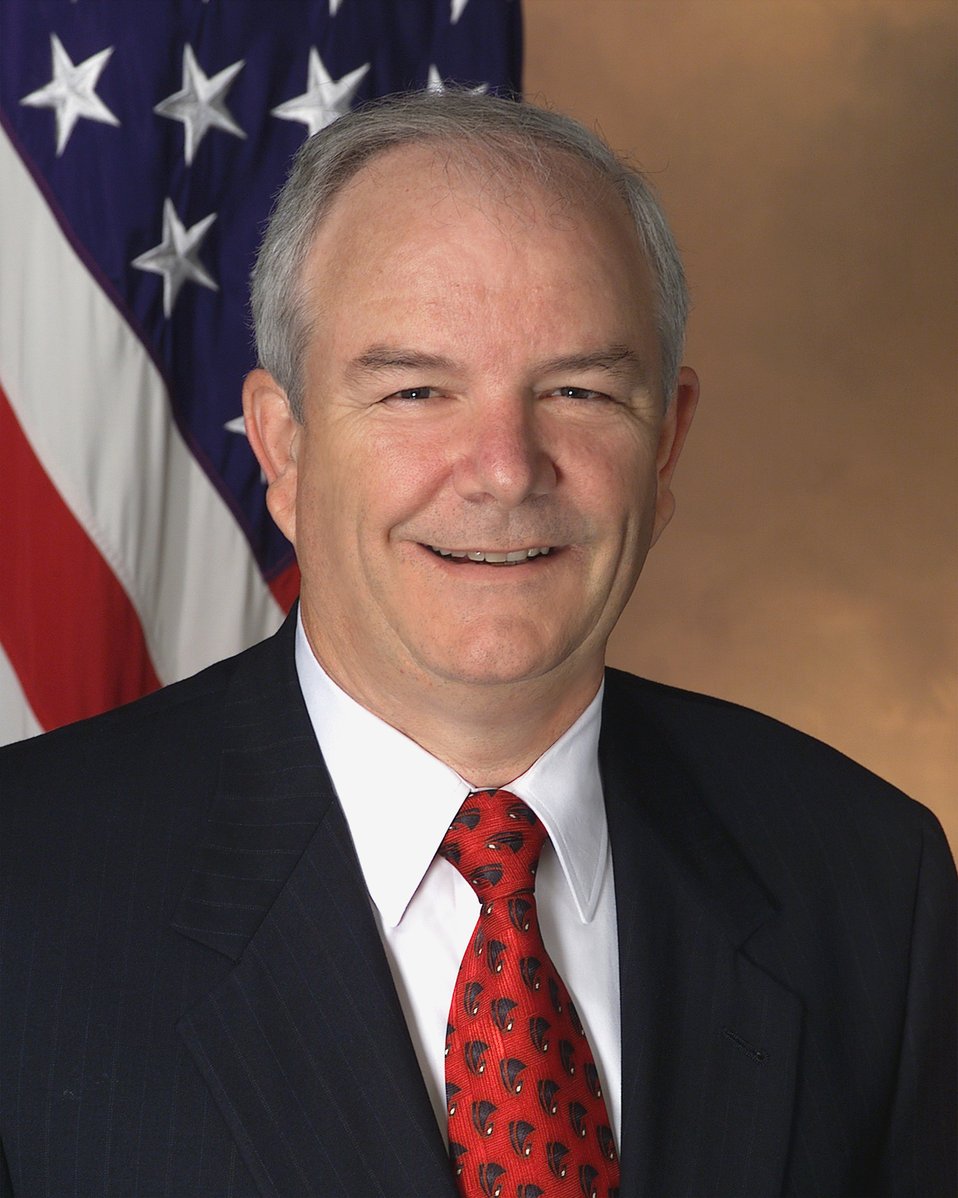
Wynne confirmed as next SECAF

FILE PHOTO -- Michael Wynne was confirmed Oct. 28 as the next secretary of the Air Force. He is currently serving as the deputy undersecretary of defense for acquisition, technology and logistics.